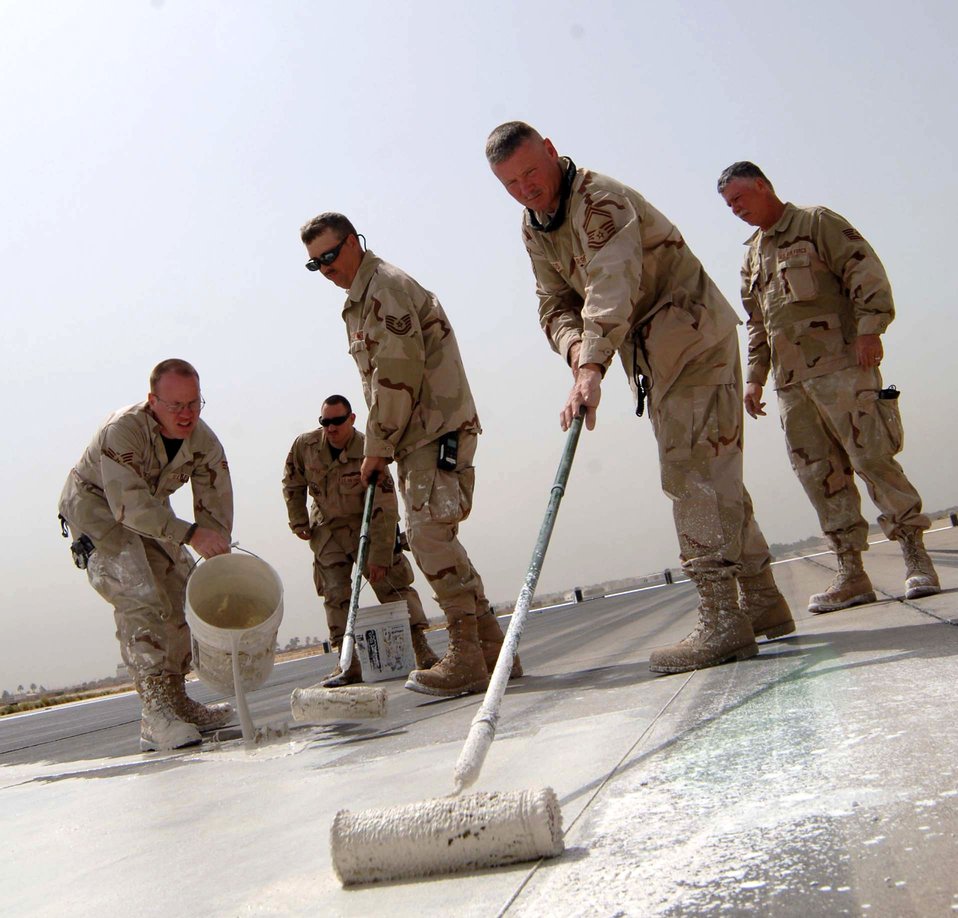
Drawing a line in the desert

Airmen from the 447th Expeditionary Civil Engineer Squadron paint a liquid lime mixture on the runway May 30 at Baghdad International Airport in Iraq. The lime acts as temporary markings for the shortening of the runway so repairs can be made. The runway was shortened by 3,000 feet.